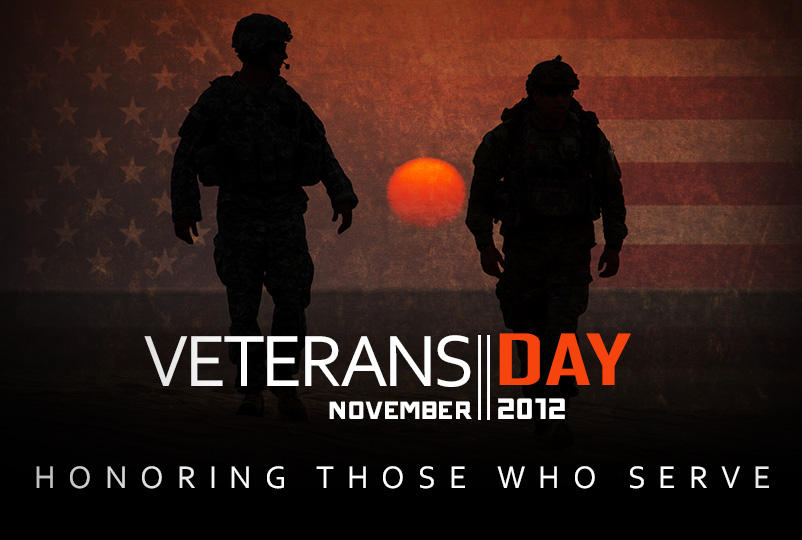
Veterans Day